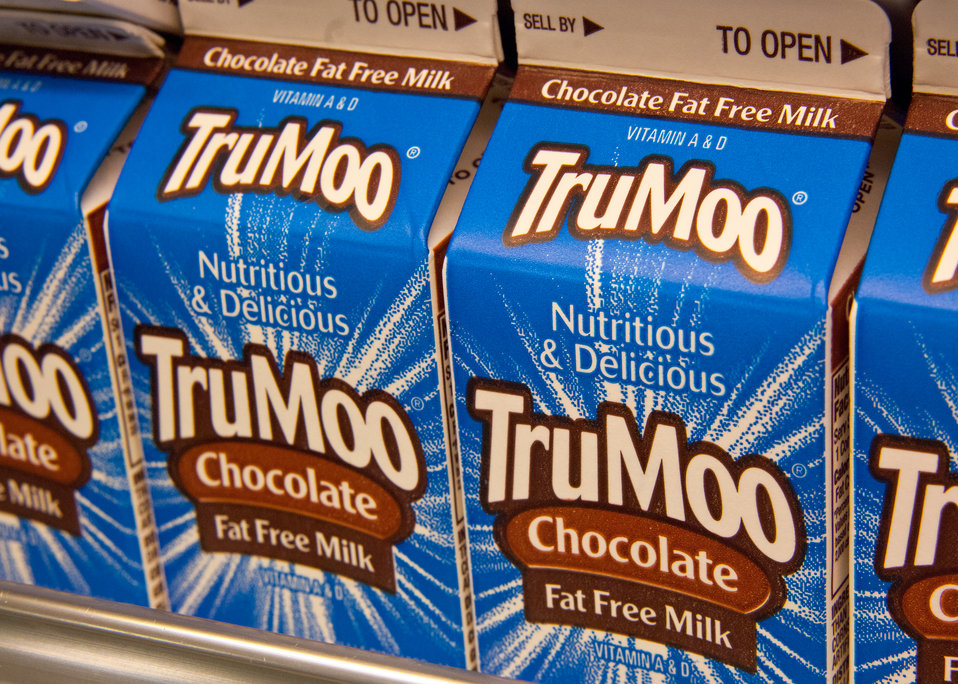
Chocolate milk for students at Washington-Lee High School in Arlington, Virginia for lunch service, the milk is available through the National School Lunch Program, on Wednesday, October 19, 2011. The National School Lunch Program is a federally assisted meal program administered by the United States Department of Agriculture, Food and Nutrition Service operating in public, nonprofit private schools and residential child care institutions. It provides nutritionally balanced, low-cost or free lunches to children each school day.